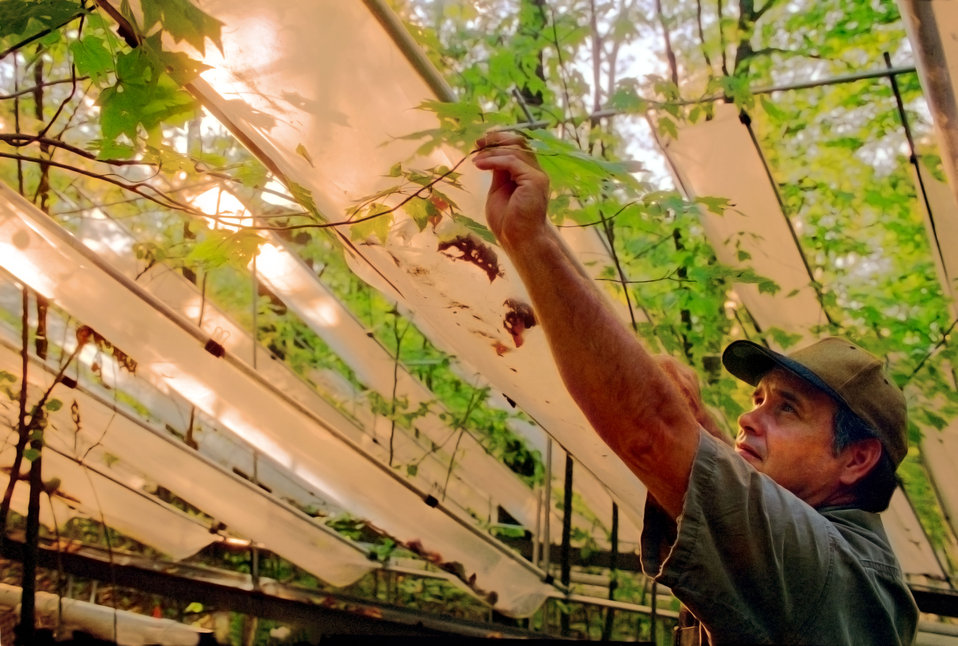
Throughfall Displacement Experiment at Oak Ridge National Lab.

95-414 DOE photo by Lynn Freeny

Throughfall Displacement Experiment at Oak Ridge National Lab. Oak Ridge Tennessee 9-5-1995